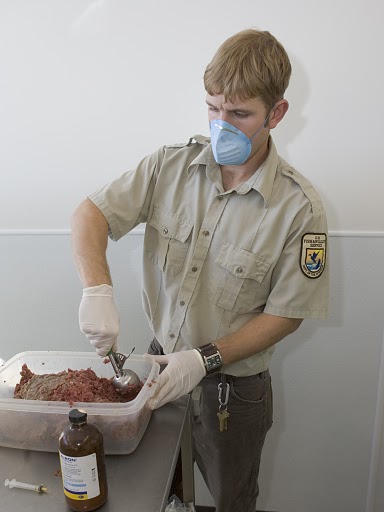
Getting Ready to Feed

USFWS employee at the National Black-footed Ferret Conservation Center getting meat ready to feed the black-footed ferrets.